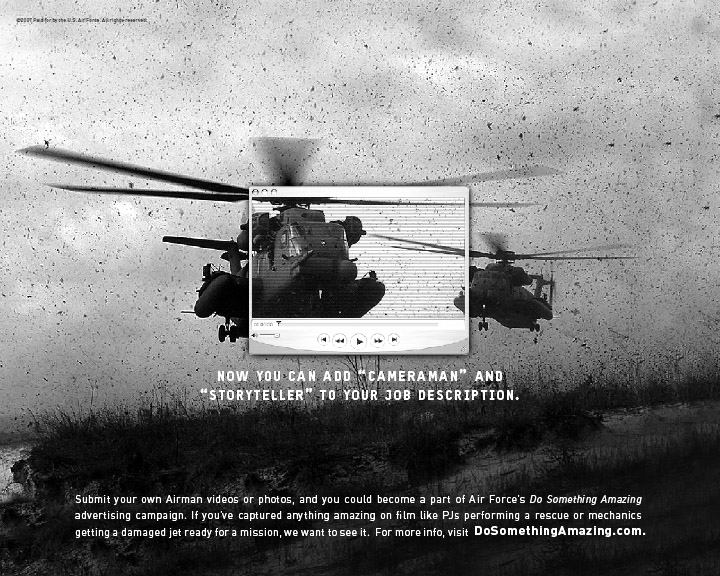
Airmen invited to 'Do Something Amazing'

As part of the